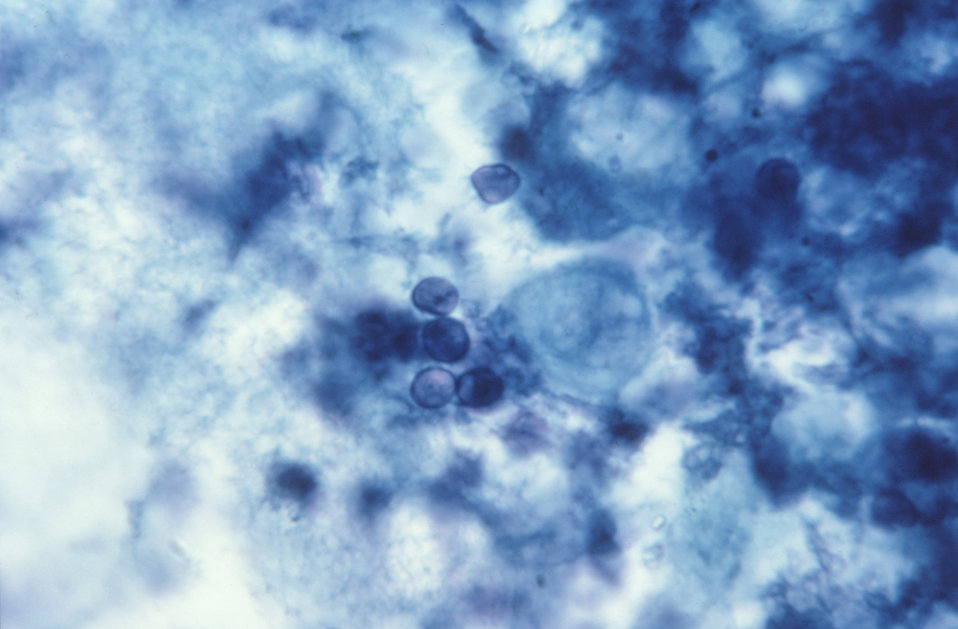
This micrograph indicates pulmonary pneumocystosis due to Pneumocystis jirovecii, formerly known as Pneumocystis carinii using toluidine blue stain.